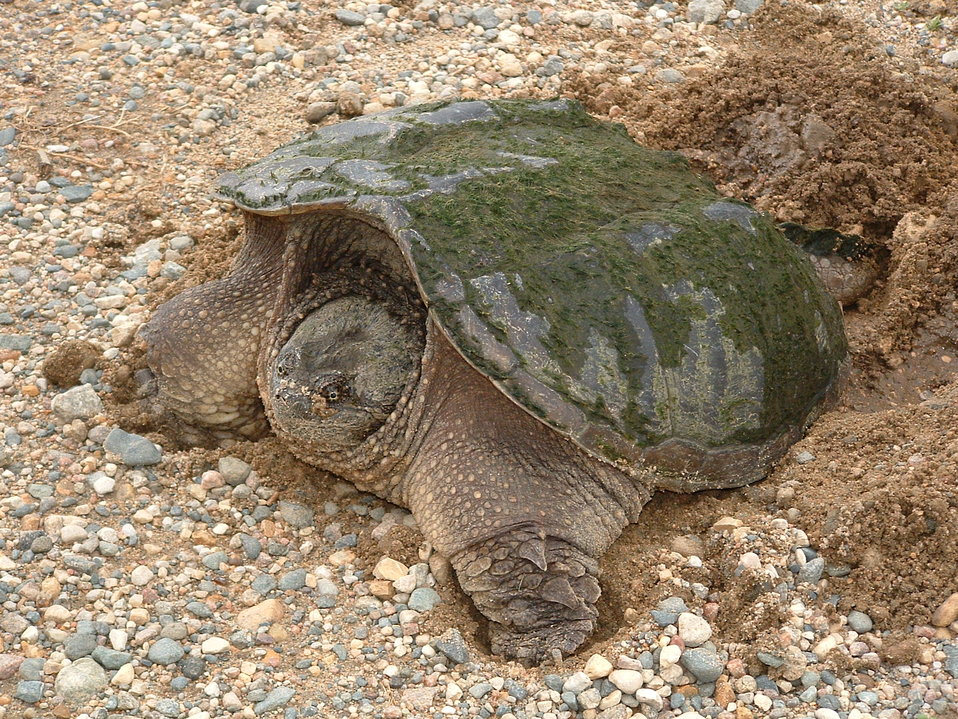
Busy

An algae-covered snapping turtle ignores a nosy photographer while digging a nest at Waubay NWR.